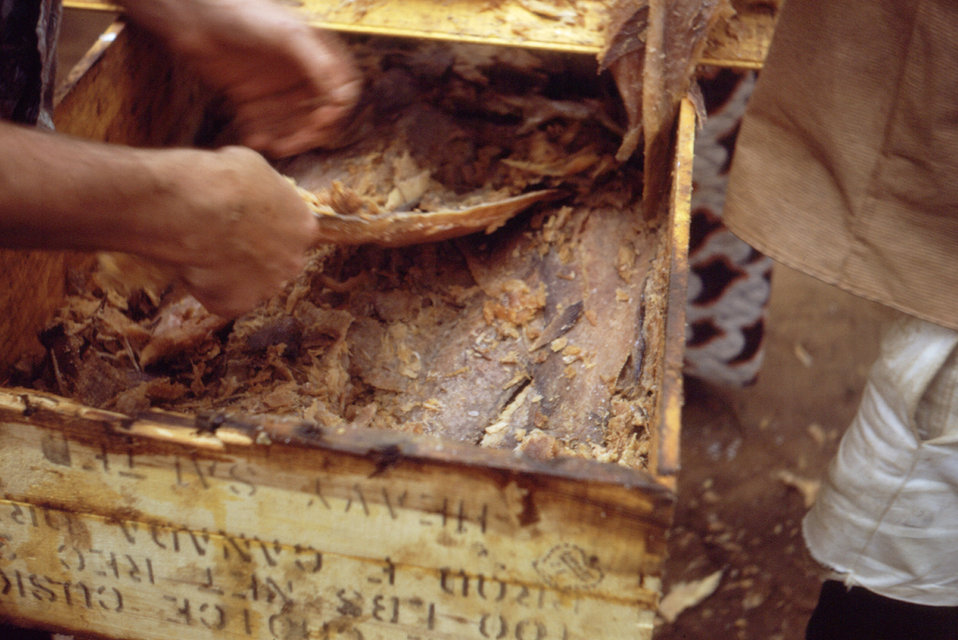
This 1968 photograph showed salted dried codfish that was distributed to refugees of the Nigerian-Biafran war in the late 1960s. Such fish helped to supplement the protein deficient diets of the camp inhabitants who were suffering from protein malnutrition, which would eventually lead to kwashiorkor.